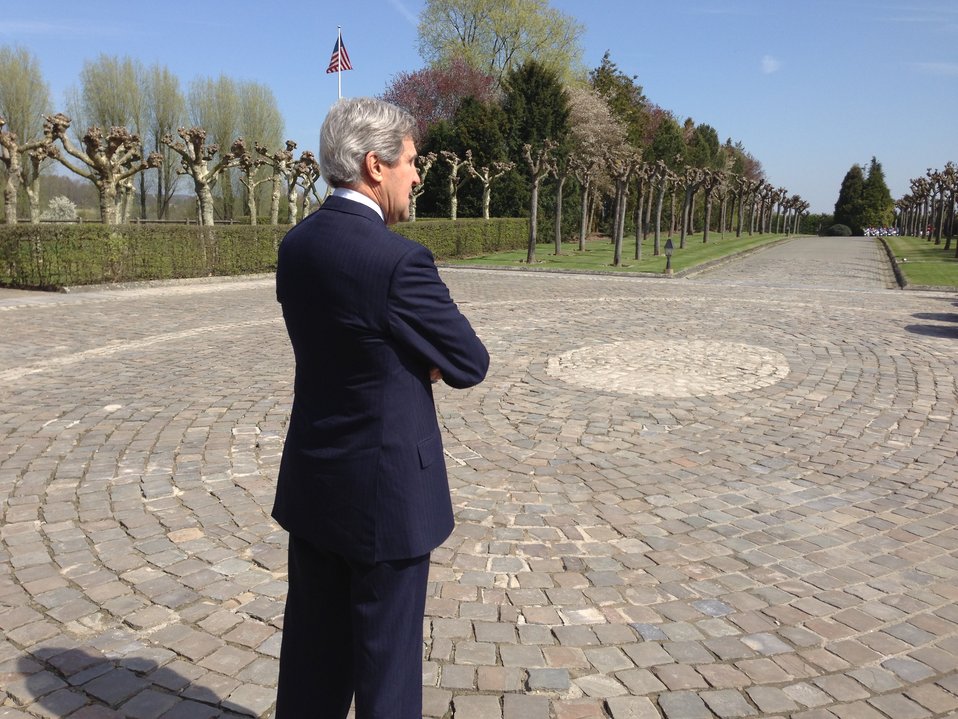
Secretary Kerry at the Home of the U.S. Ambassador to NATO

U.S. Secretary of State John Kerry waits outside Truman Hall, home to the U.S. Ambassador to NATO, before hosting a meeting between Afghan President Hamid Karzai and Pakistani Chief of Army Staff General Ashfaq Kayani in Brussels, Belgium, on April 24, 2013.